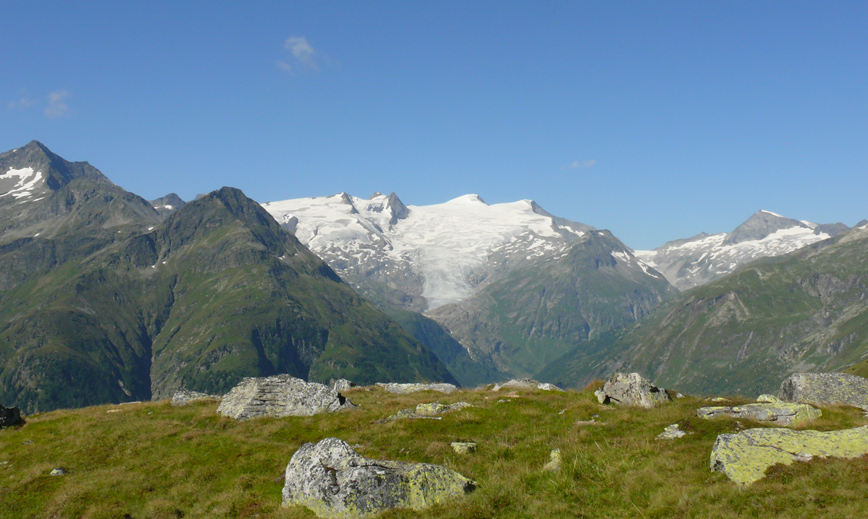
Deutsch: Blick auf die zentrale Venedigergruppe von Osten aus (St. Pöltner Ostweg, Grünsee), mit Großvenediger (3.662 m, Gle´tschergipfel in Bildmitte). Rechts der plattige Habach (3.214 m)